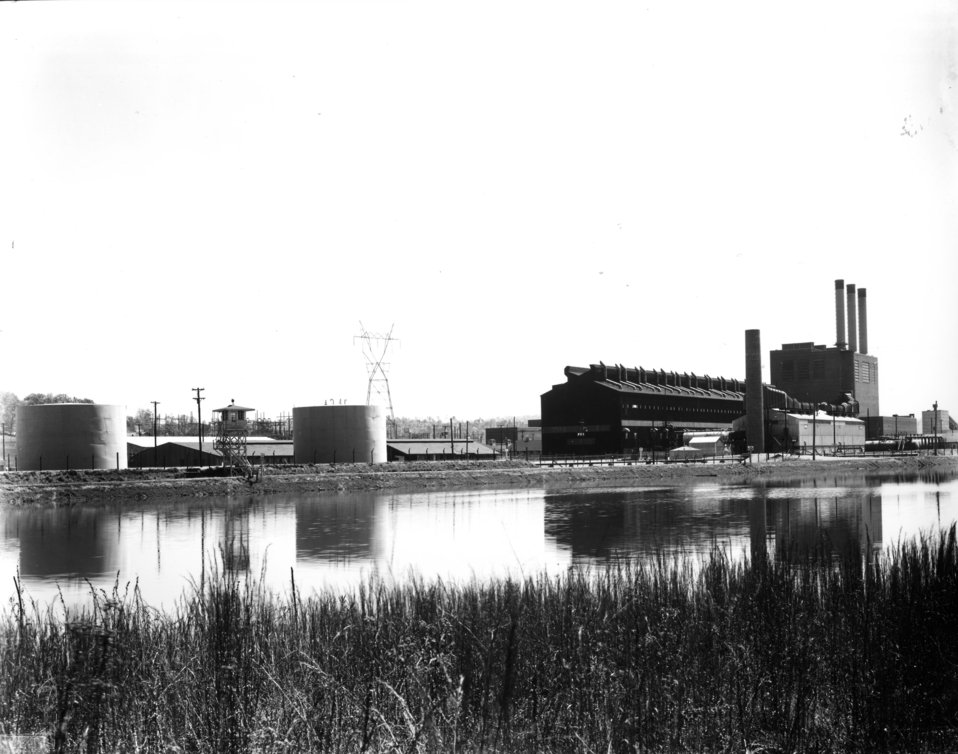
Schools at Oak Ridge